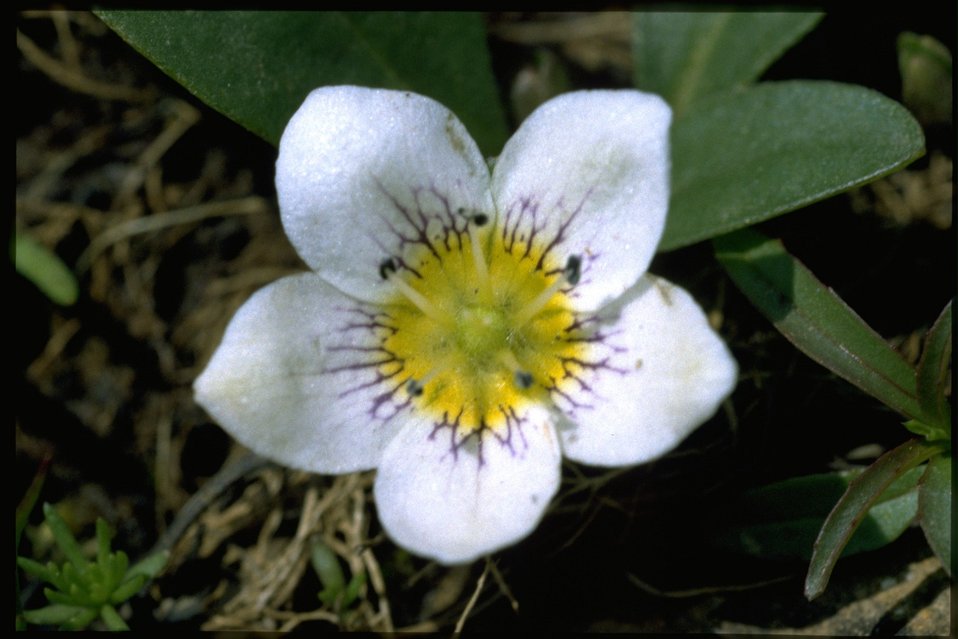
Closup shot of Dwarf Hesperochiron, Hesperochiron pumilus, wildflowers.